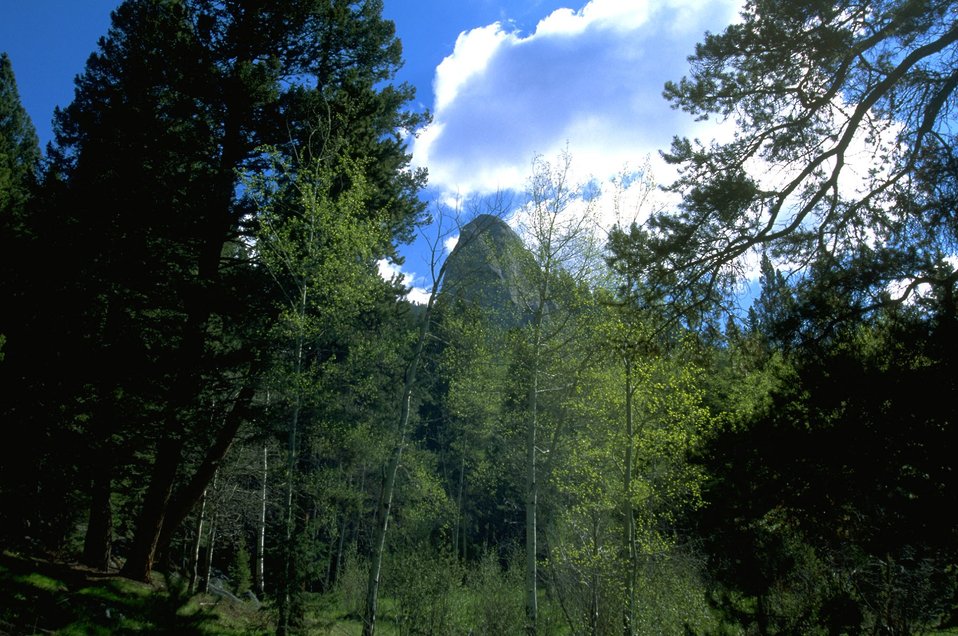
Humbug Spires Wilderness Study Area